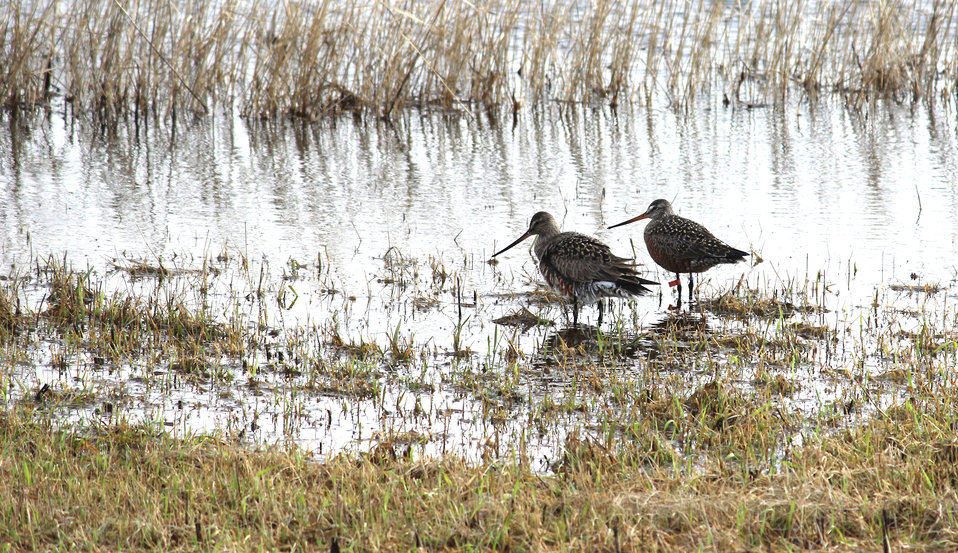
Hudsonian Godwit with Leg Bands

Look carefully in this photo to see the alphanumeric flag and color bands on one of the godwits. These bands are used to identify individual birds and track their migrations, movements, lifespan, and health.